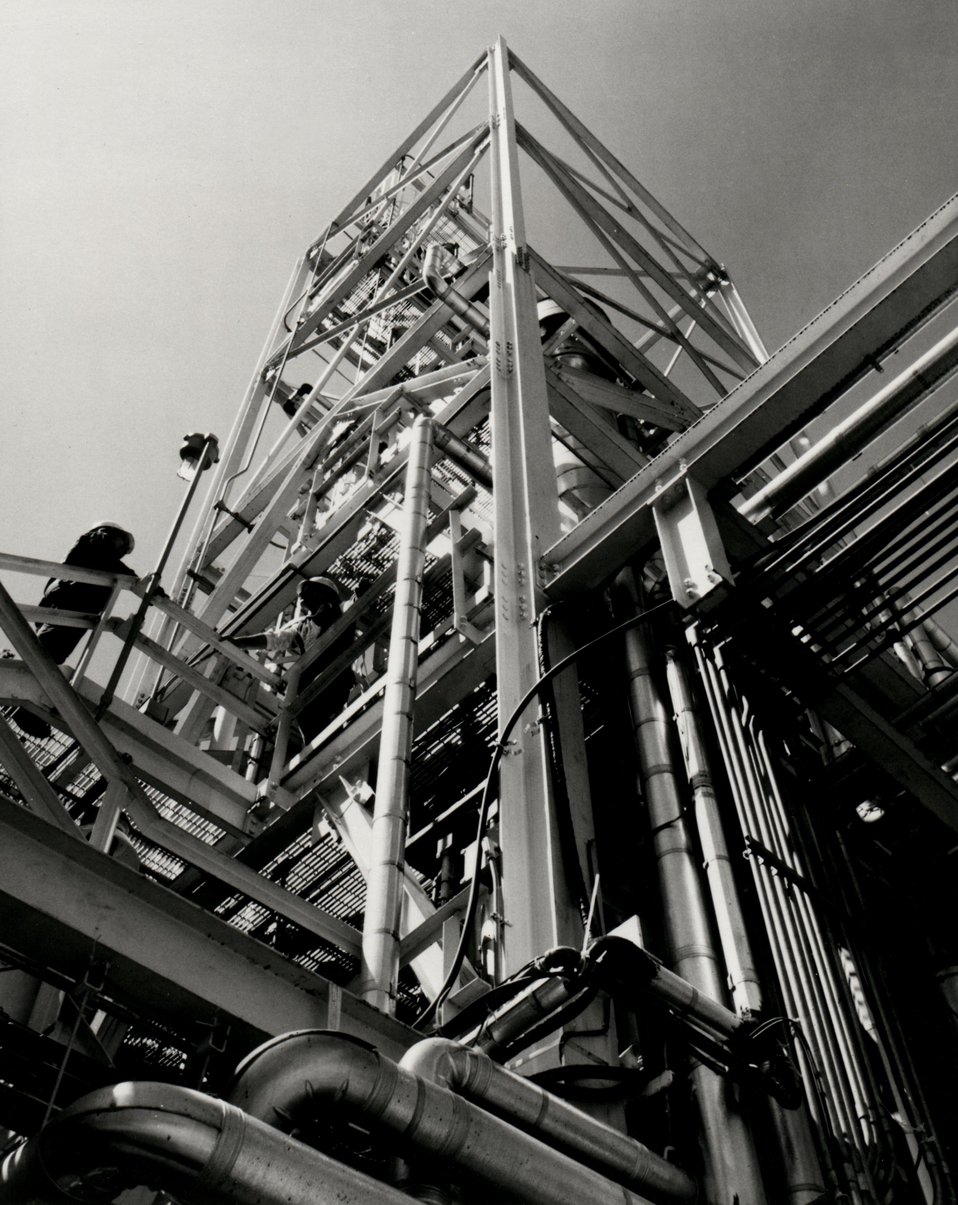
Intergrated Gasification/Combined Cycle (IGCC) research facility in Schenectady, N.Y., is a special cleanup system for removing sulphur compounds from the synthetic coal-gas. Circa 1980.